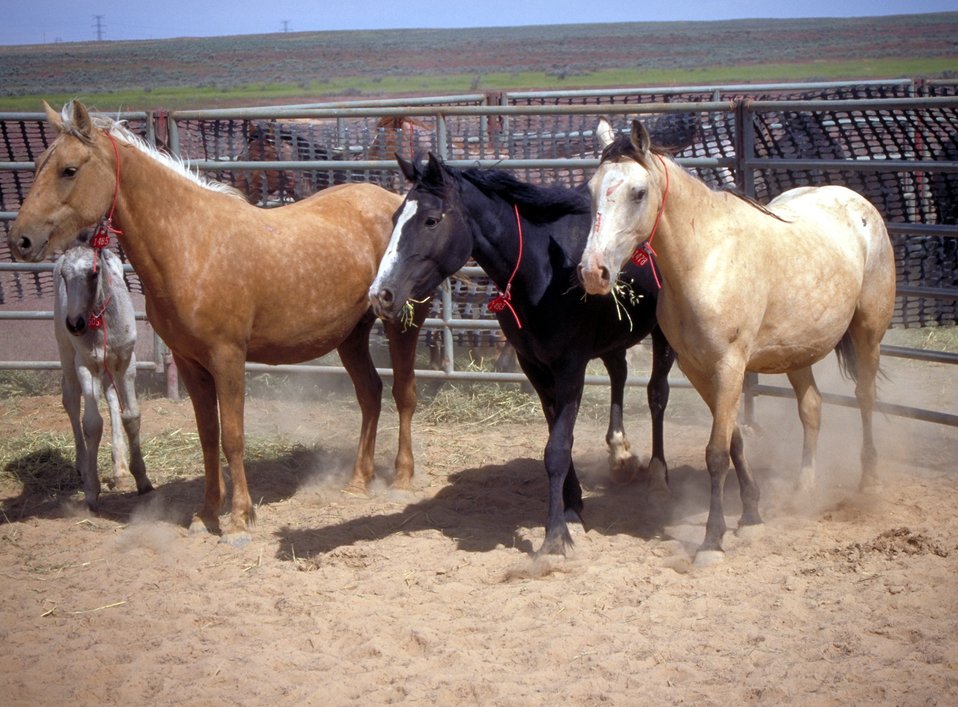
EIA testing near Vernal, Utah.